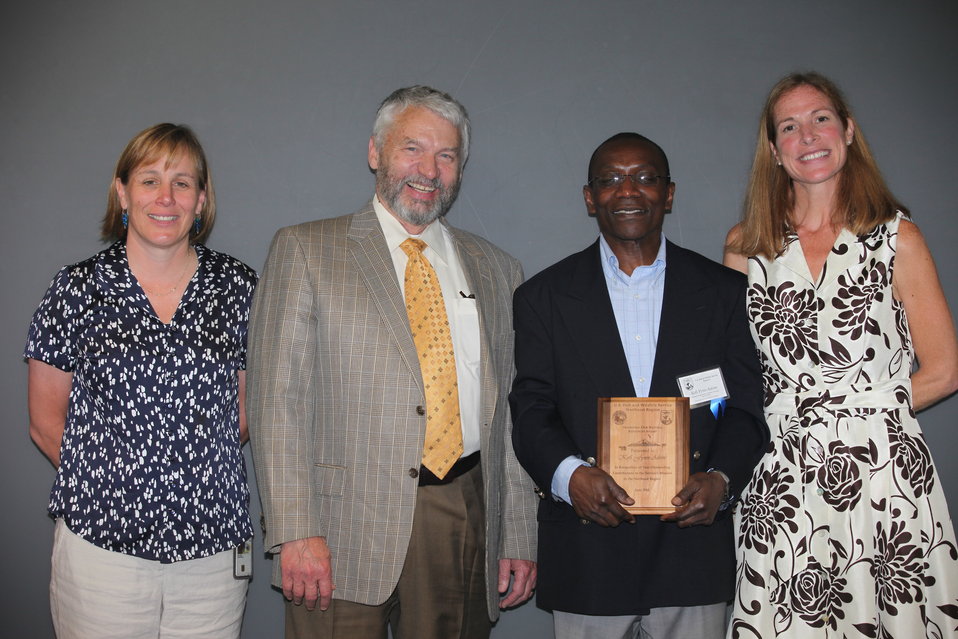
Kofi Fynn-Aikins of the Lower Great Lakes Fish and Wildlife Conservation Office was awarded the Promoting Our Natural Resources Award.
From left to right: Deputy Regional Director Deb Rocque, Deputy Director Rowan Gould, Kofi Fynn-Aikins, and Regional Director Wendi Weber